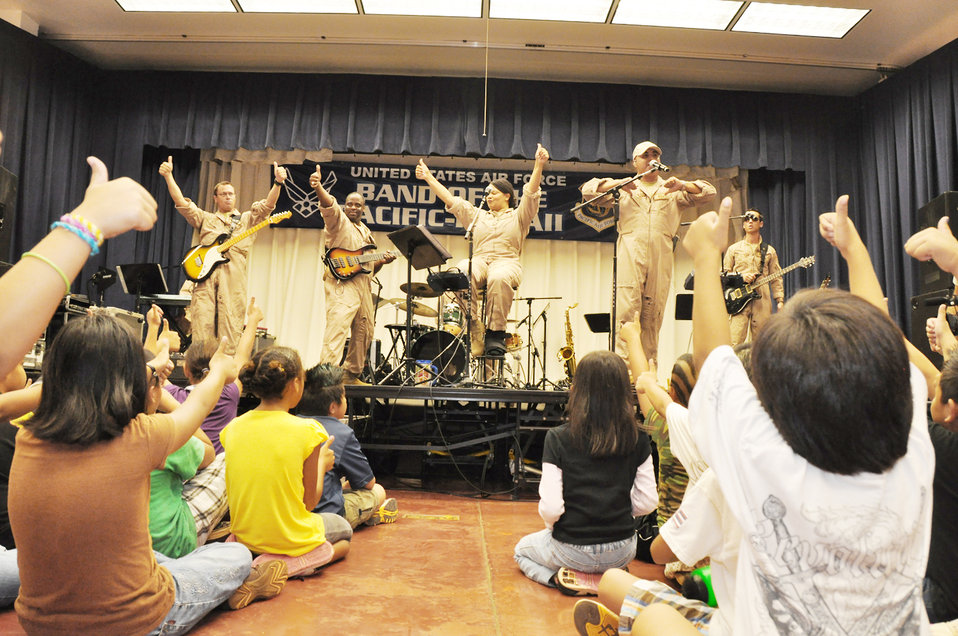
Band of the Pacific-Hawaii participates in Red Ribbon Week

Band of the Pacific-Hawaii members perform at Kaleiopuu elementary School Oct. 22, 2009, in Waipahu, Hawaii. The band peformed as part of Red Ribbon Week that is aimed at reinforcing children's decisions to stay away from drugs and make positive decisions in life.